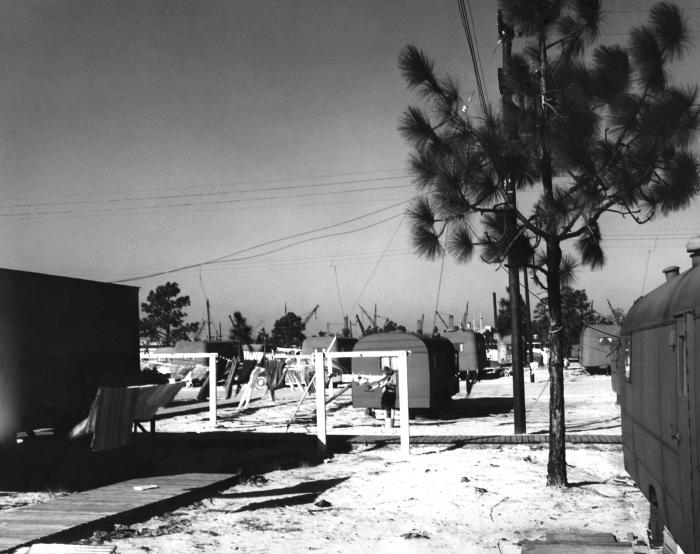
Provided by the Center for Disease Control's (CDC), National Institute for Occupational Safety and Health (NIOSH), this historic 1943 image depicted a view of a North Carolina workcamp trailer park, which was located onsite at an industrial workplace. In this particular view, a female trailer park resident could be seen hanging newly washed laundry upon make-shift clothes lines so that they would be air-dried.